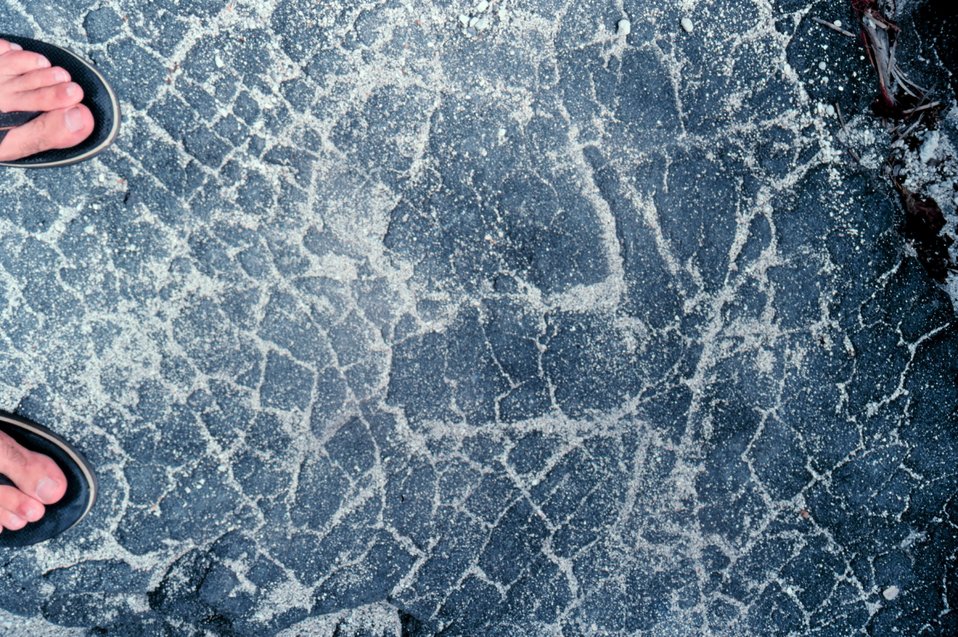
Natural petroglyphs - apparently filling and natural cementing of cracks in basalt.